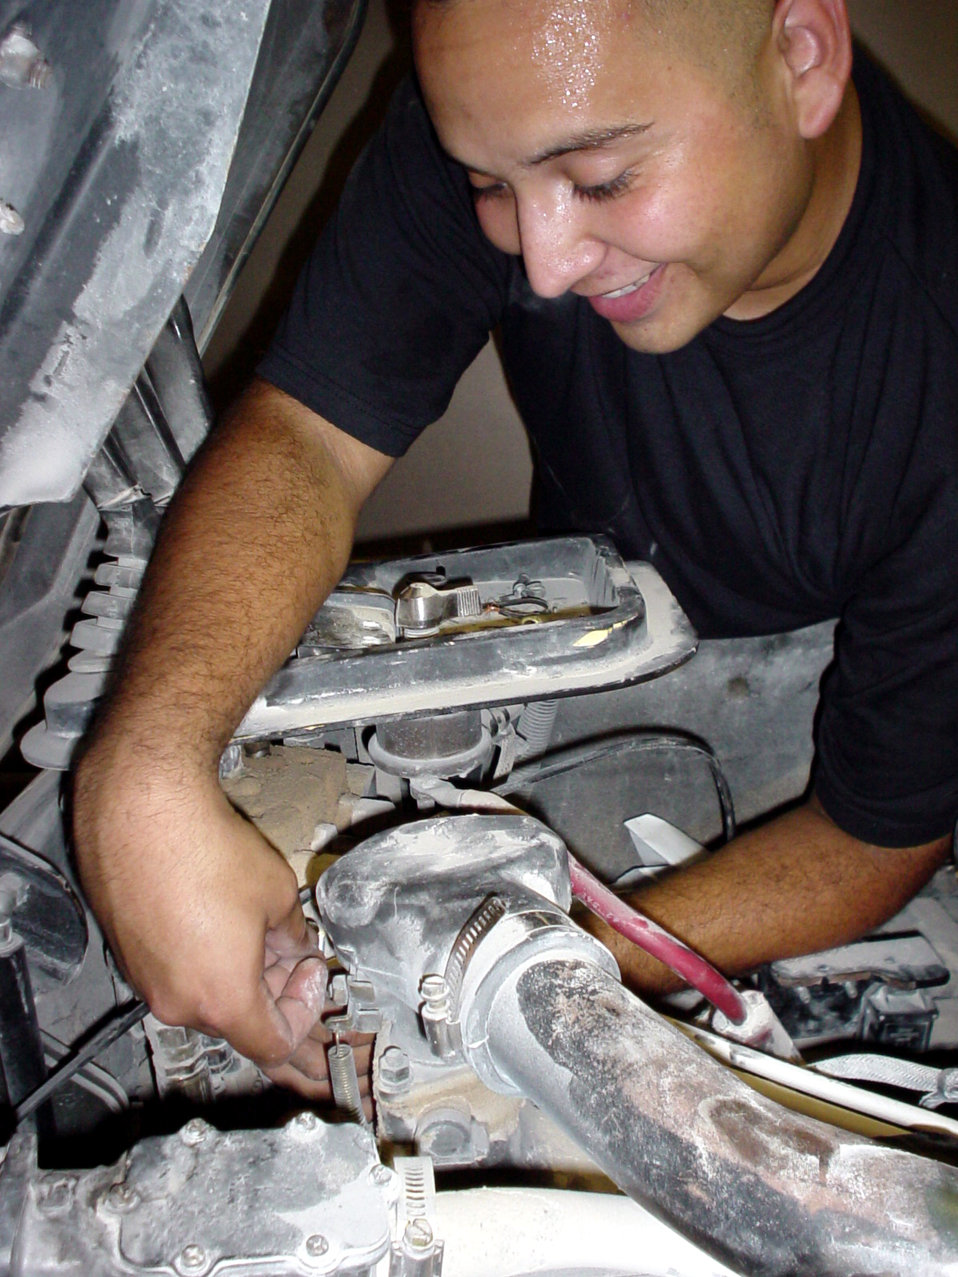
Keeping engines running

AL UDEID AIR BASE, Qatar -- Senior Airman Samuel J. Rios replaces a forklift throttle cable inside a vehicle maintenance shop Sept. 29. Rios is a special-purpose mechanic assigned to the 379th Expeditionary Logistics Readiness Squadron here. He is deployed from McGuire Air Force Base, N.J.